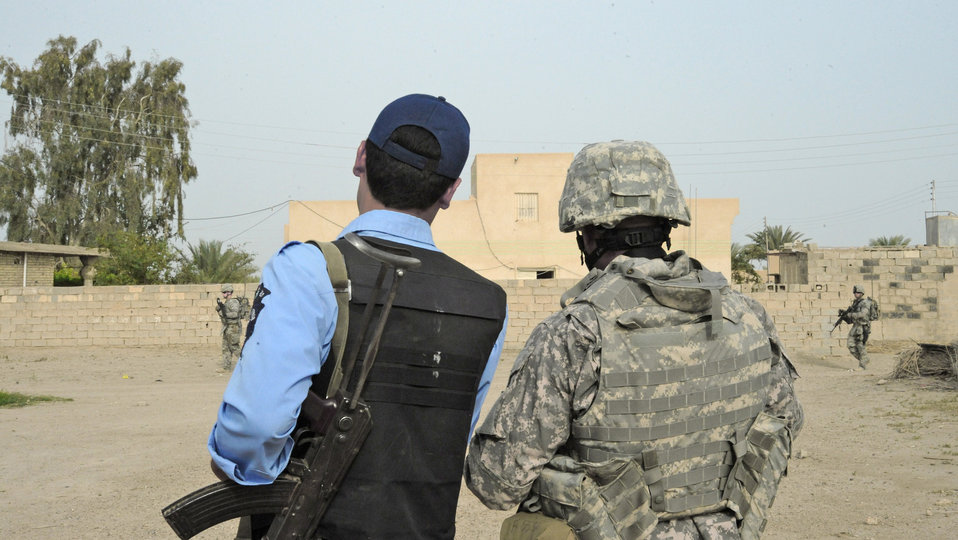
Security forces help promote Iraqi community policing

A security forces member and an Iraqi police officer discuss recent attacks during a joint presence patrol April 4, 2010, near Rufush, Iraq.